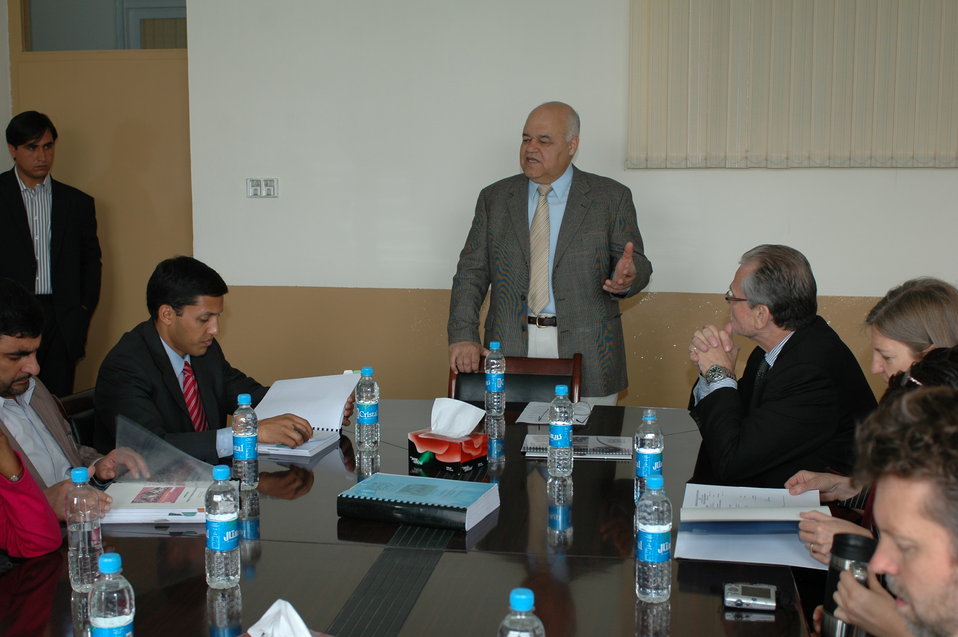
Dr Shah Visits Votech in Kabul